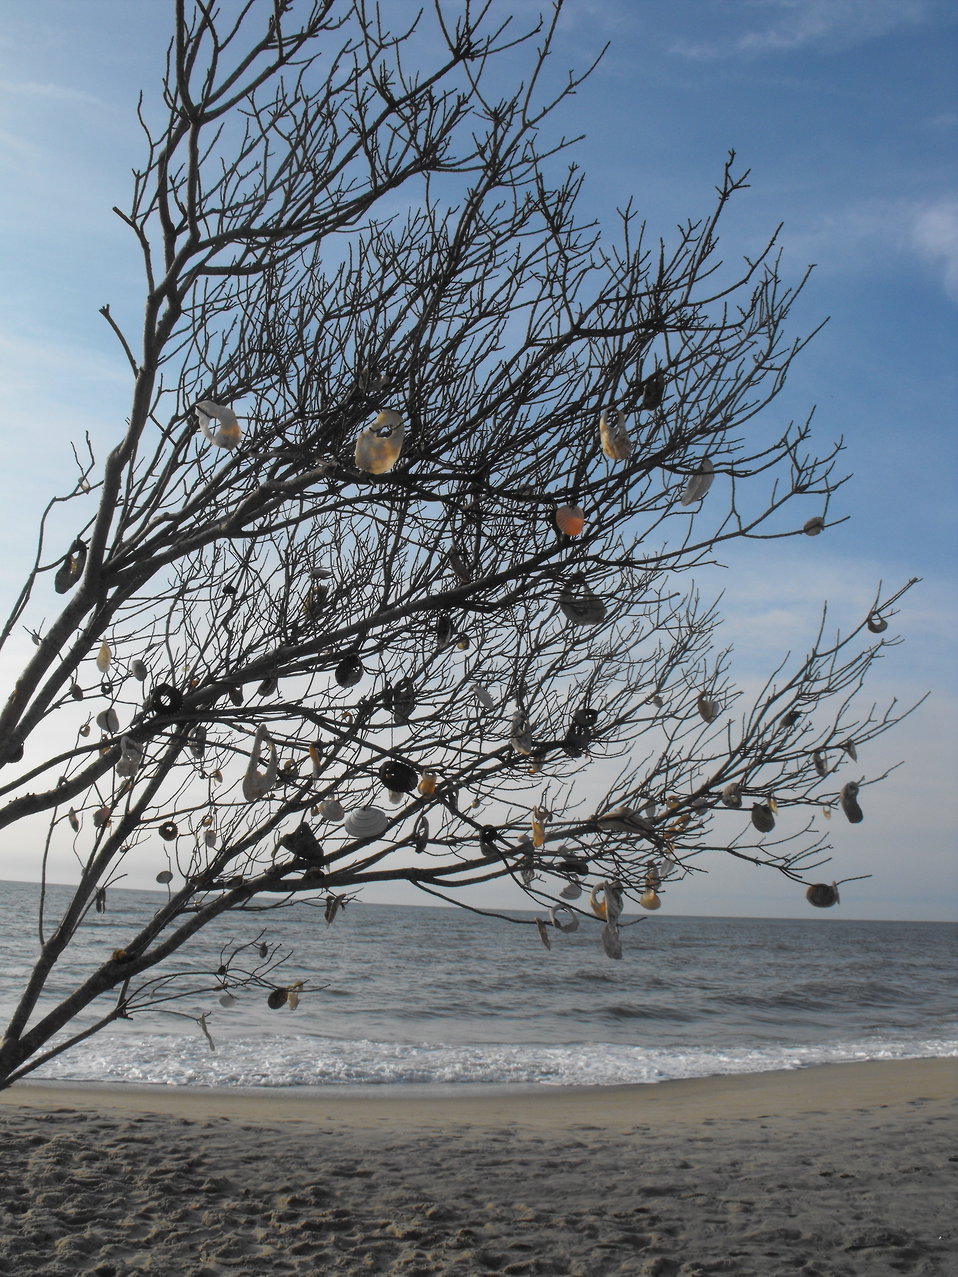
Photo of the Week - Shell Tree at Chincoteague National Wildlife Refuge, Virginia

Photo of the Week - 12/22/10

One of the 'shell trees' on Wild Beach at Chincoteague National Wildlife Refuge / Assateague Island National Seashore. Visitors like to decorate the remnants of trees, once in the marsh but now overtaken by the beach as it shifts.